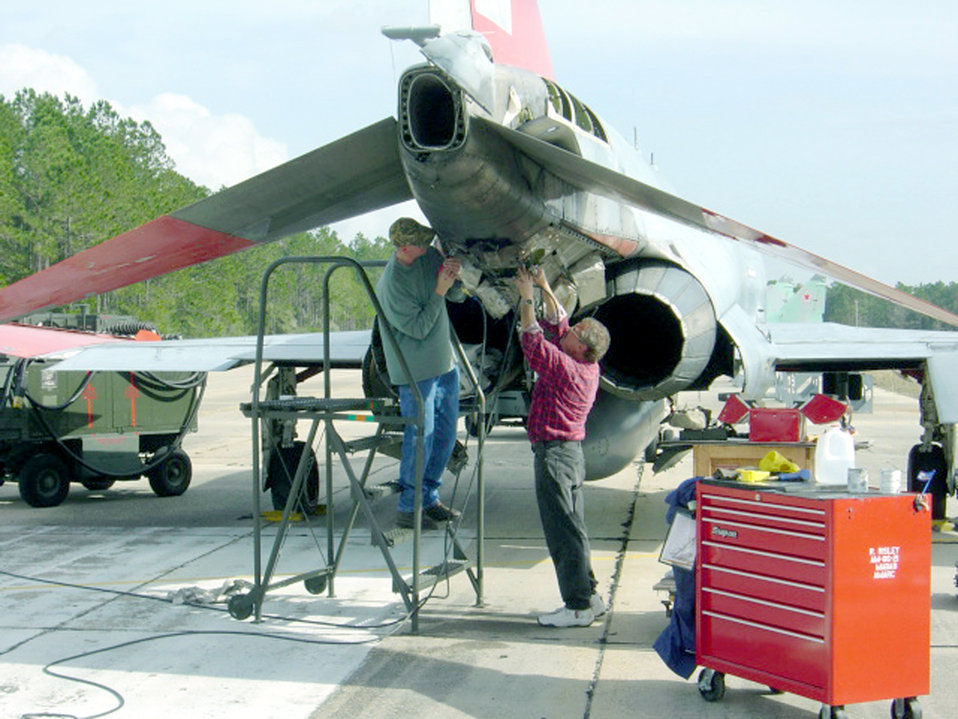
TYNDALL AIR FORCE BASE, Fla. -- James Gunn (left) and Gene Fischer remove damaged titanium blast shields from a QF-4 Phantom II here. They are aircraft structural engineers. Mr. Gunn is from Hill Air Force Base, Utah. Mr. Fischer is from the Aerospace Maintenance and Regeneration Center at Davis-Monthan AFB, Ariz.